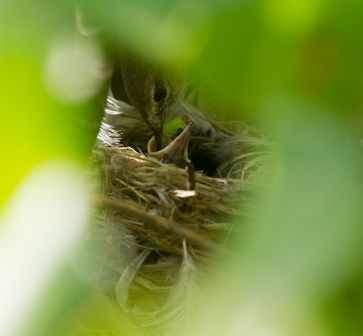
parent feeds the first nestling

Laysan Island
March 12, 2012